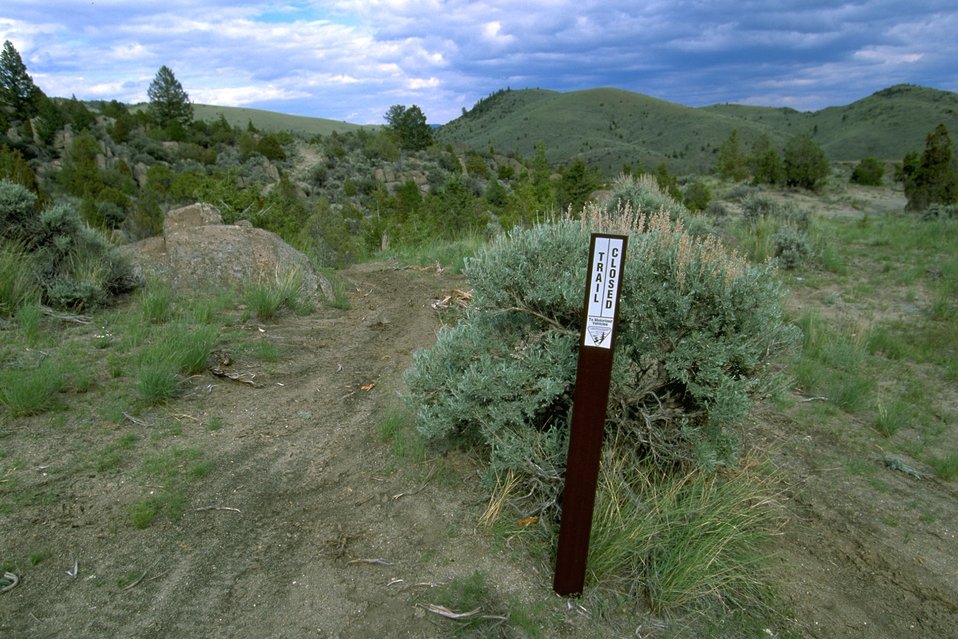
Closed Trail sign in the Pipestone Hills